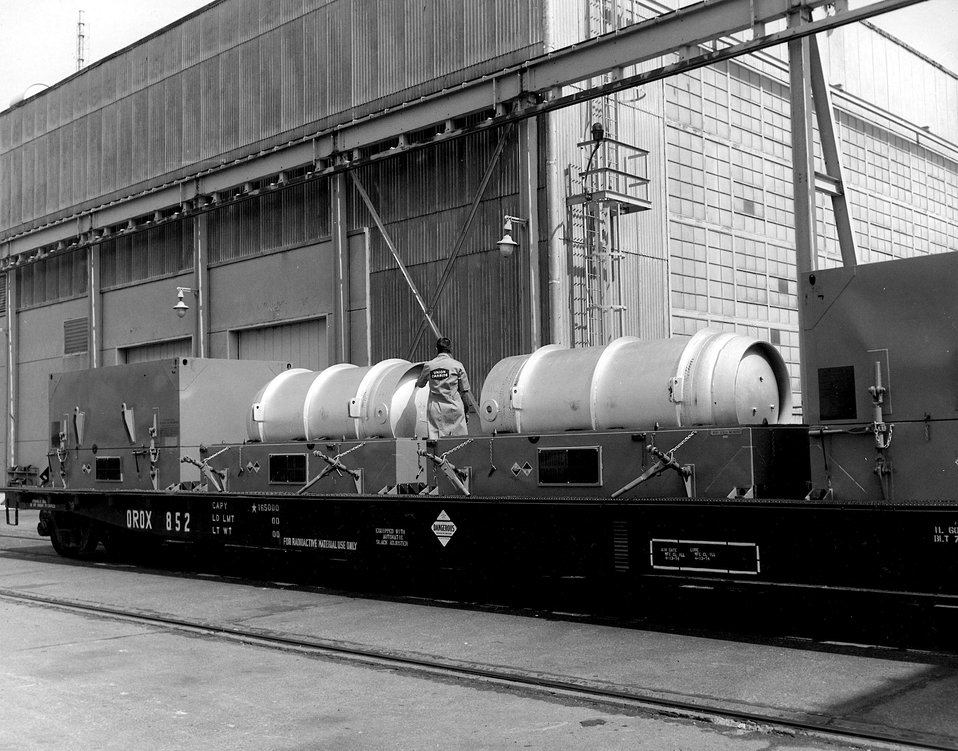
Modified railway cars with special protective equipment are now being used by the Paducah Gaseous Diffusion Plant to transport UF6 produce, 1% enrichment, to other AEC gaseous diffusion plants in Oak Ridge, Tenn. and Portsmouth, Ohio. Circa 1974.